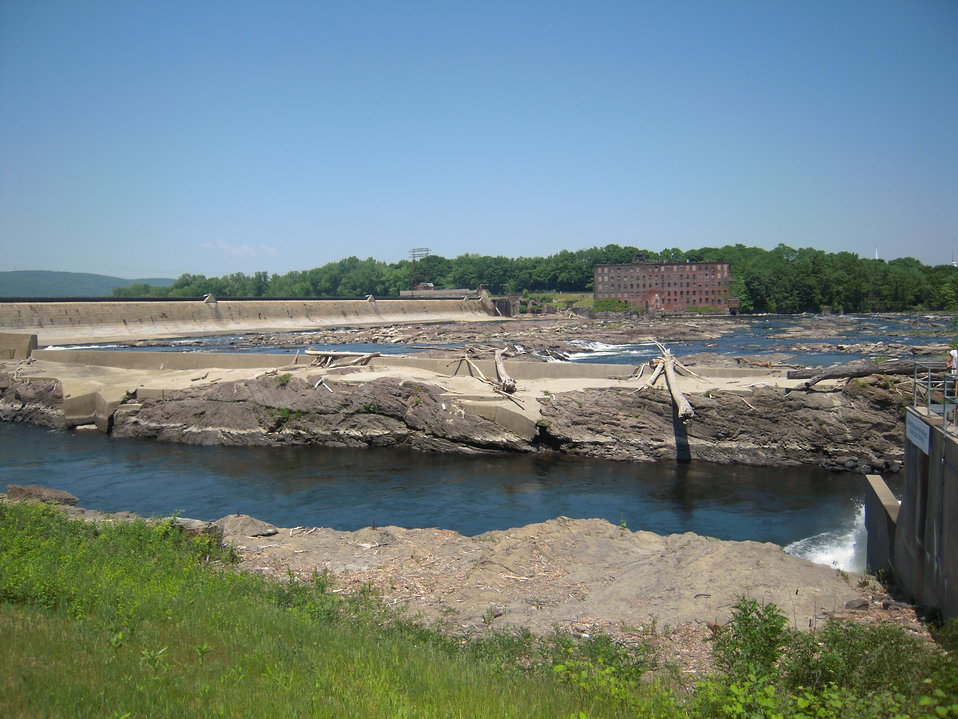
Holyoke Dam